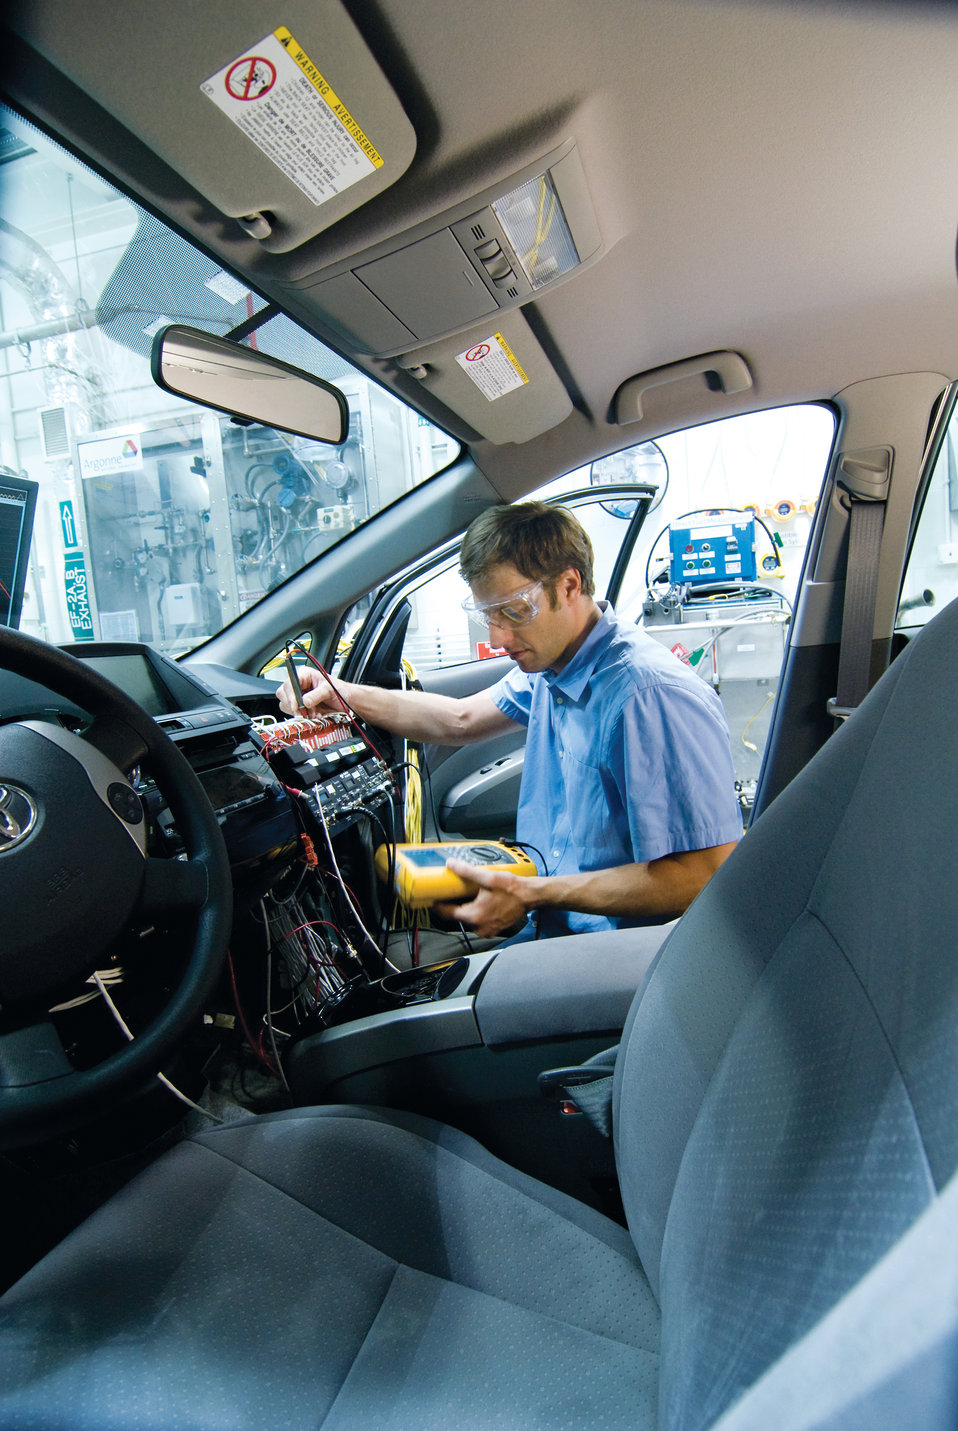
Mike Duoba tests a prototype Plug-In Hybrid Vehicle at Argonne's Transportation Technology R&D Center.

Research at the center focuses on several areas, including batteries, fuel cells, vehicle systems, engine research, applied material research, technology and systems assessments and recycling. Argonne helps ensure a reliable supply of efficient and clean energy for the future by working closely with develop technologies that reduce the United States' dependence on foreign energy sources.